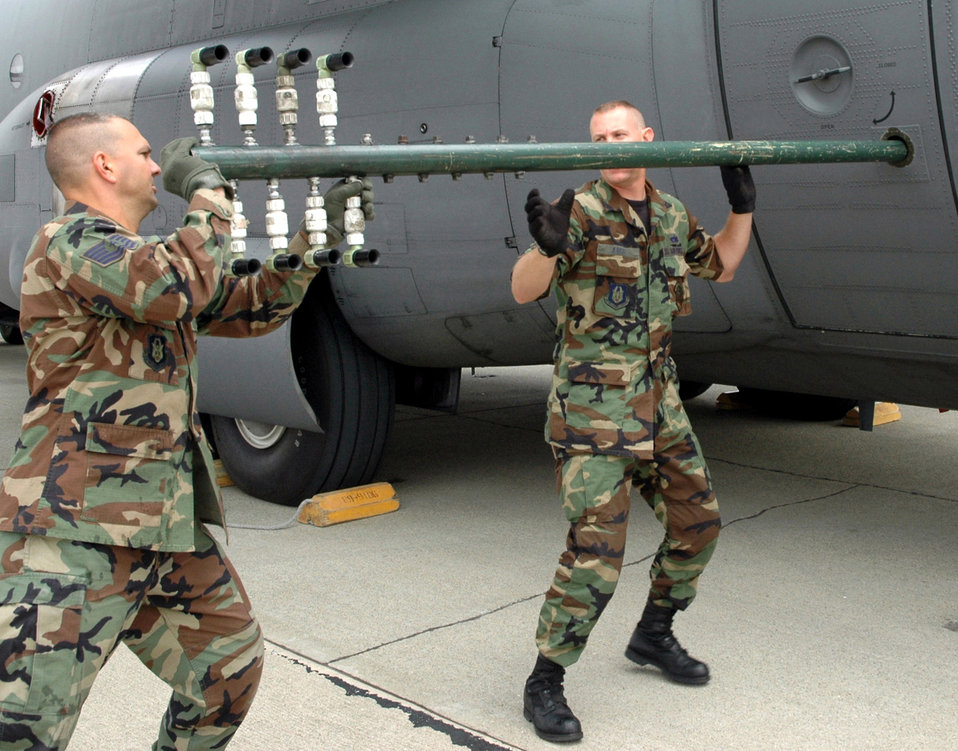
Reserve unit participates in 'Safe Seas 2006'

Tech. Sgts. Paul Tatar (left) and Tom Kocis prepare a boom nozzle configuration for a specially-modified C-130H Hercules at Moffett Federal Airfield, Calif., on Aug. 7 in support of the Safe Seas 2006 oil spill response exercise in San Francisco. The sergeants are aerial spray maintenance technicians with Air Force Reserve Command's 910th Airlift Wing at Youngstown Air Reserve Station, Ohio.